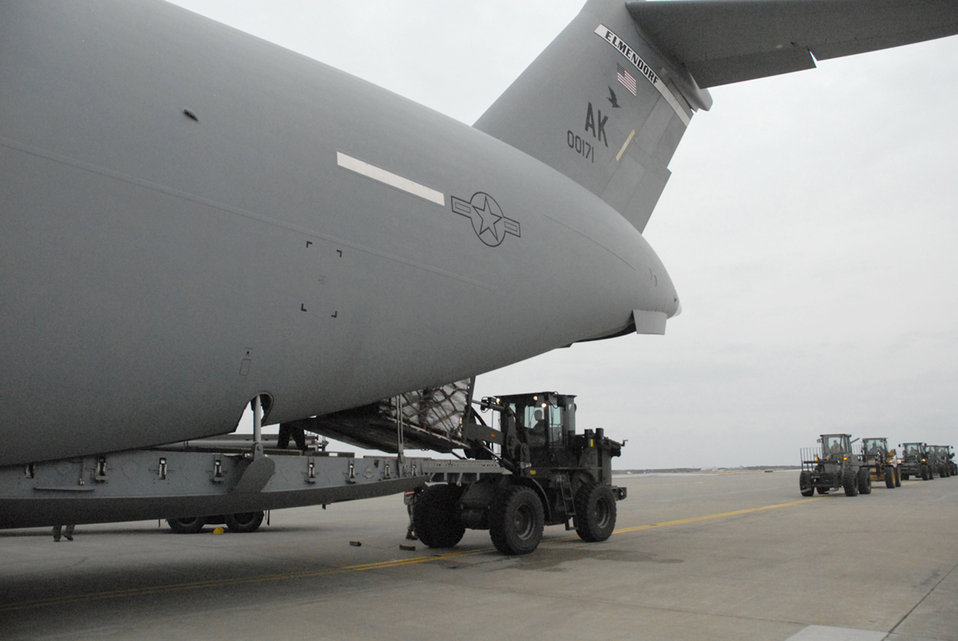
517th Airlift Squardron supports relief efforts in Japan

Joint Base Elmendorf-Richardson, Alaska -- Air Force Master Sgt. Stephen Mallory, loadmaster, stationed at the 517th Airlift Squadron, Joint Base Elmendorf Richardson Alaska, marshals 10KAT forklifts to offload 47,000 lbs of water for humanitarian relief efforts off a C-17 at Misawa Air Base, Japan.